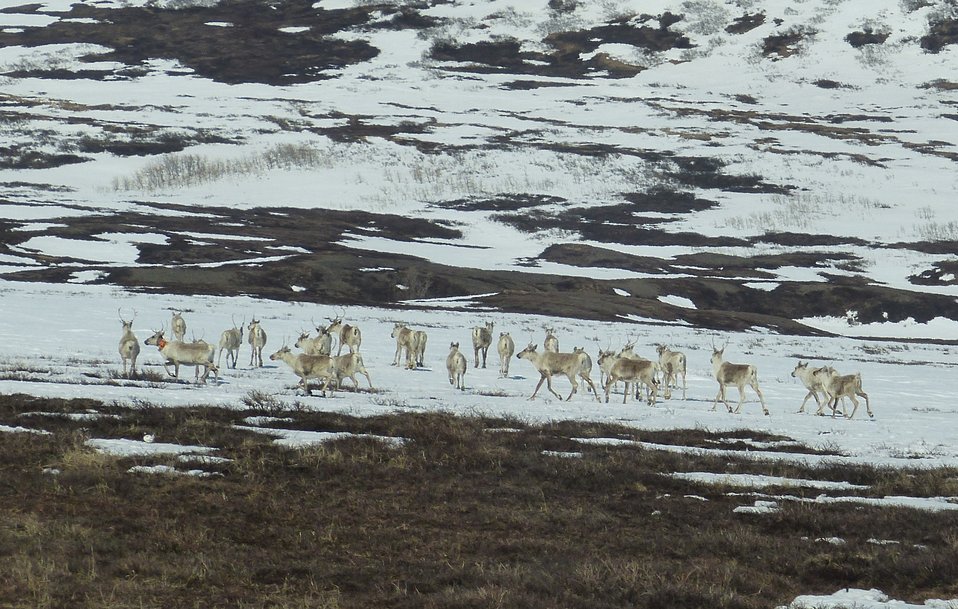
Caribou in Kilbuck Mountains on Yukon Delta National Wildlife Refuge. Includes a collared caribou.

Photo credit: Kristine Sowl
USFWS, Yukon Delta National Wildlife Refuge